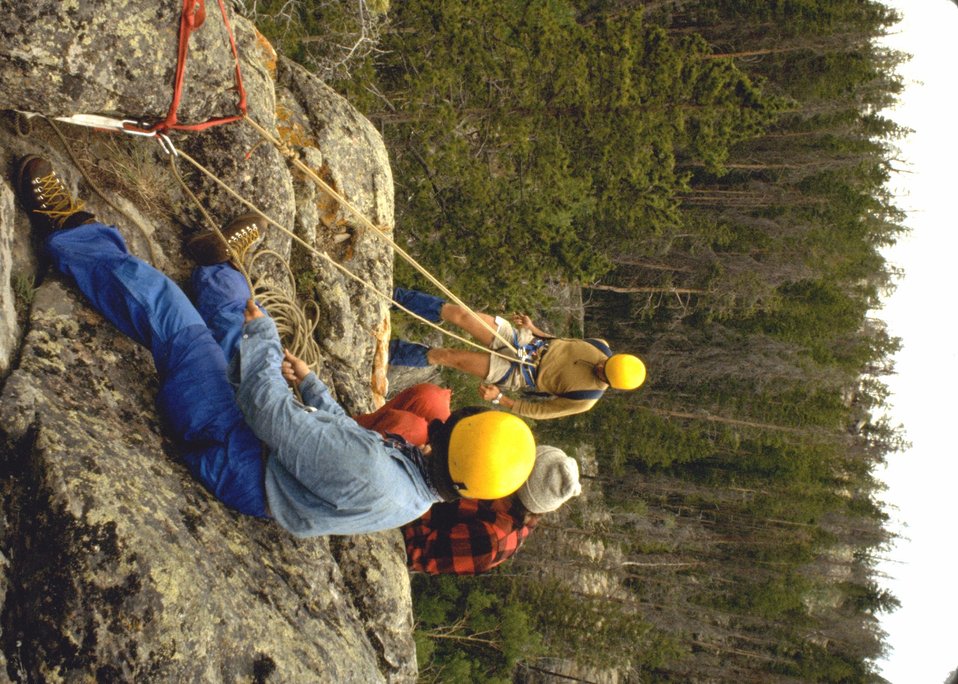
Propelling on rock side in Wyoming.